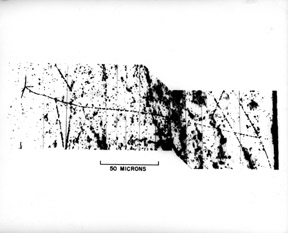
photo micrograph of the path of a meson